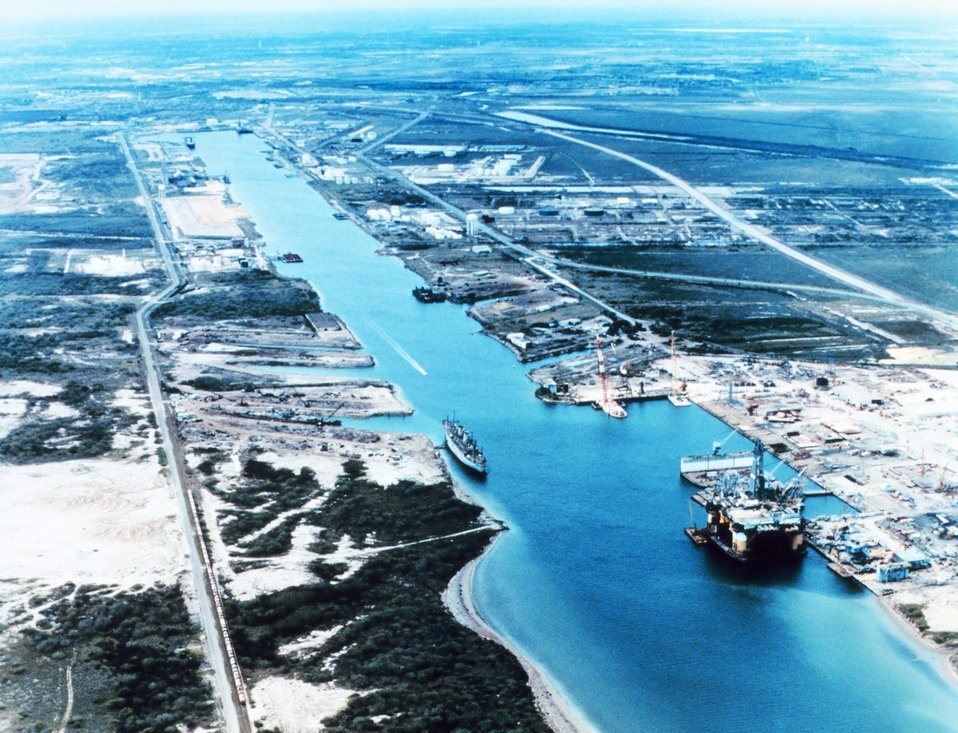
2559 North Latitude 9718 West Longitude.